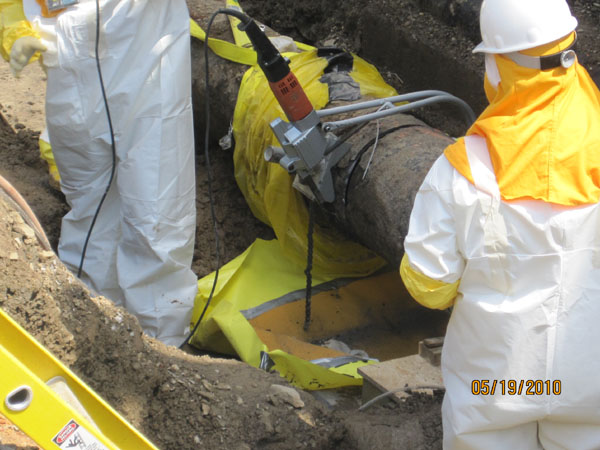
Recovery Act Funds New Equipment to Keep Waste Tanks Dry

With funding from the Recovery Act, workers at the West Valley Demonstration Project (WVDP) are installing a tank and vault drying system to evaporate the remaining liquids in the tanks and vaults, and maintain a low relative humidity to limit tank corrosion.

With an operational design life of 30 years, this system will provide needed time for WVDP officials to make and implement long-term decisions about the decommissioning of the Waste Tank Farm.